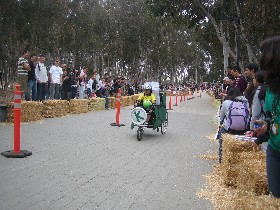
2007 UCSD Triton Junkyard Derby.